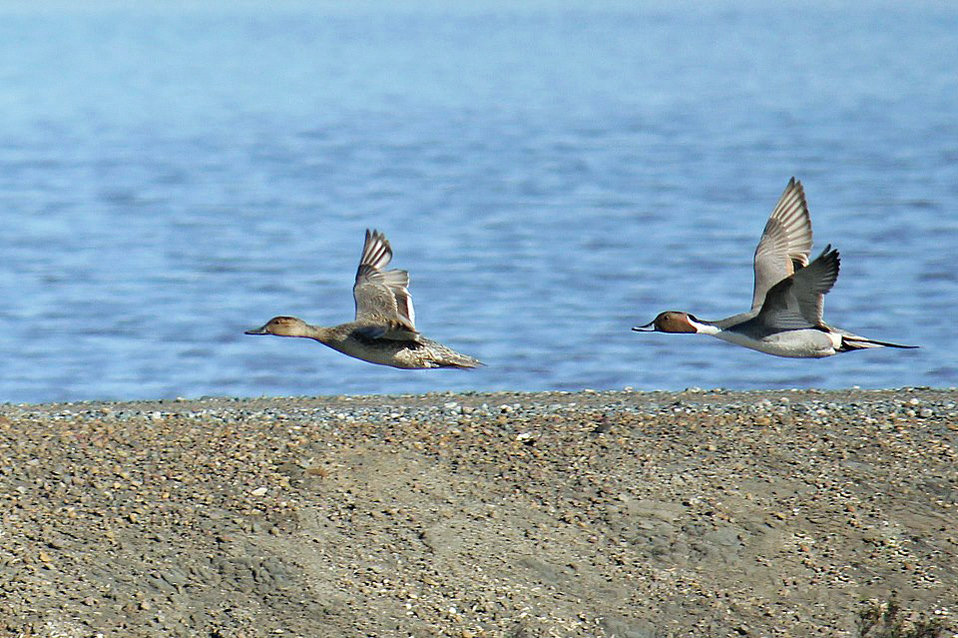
Northern pintails hover over levee of Pond 10 and 8th street

Pair of female (left) and male (right) pintails exploring the newly restored Pond 10 from the South San Diego Bay Restoration and Enhancement Project.